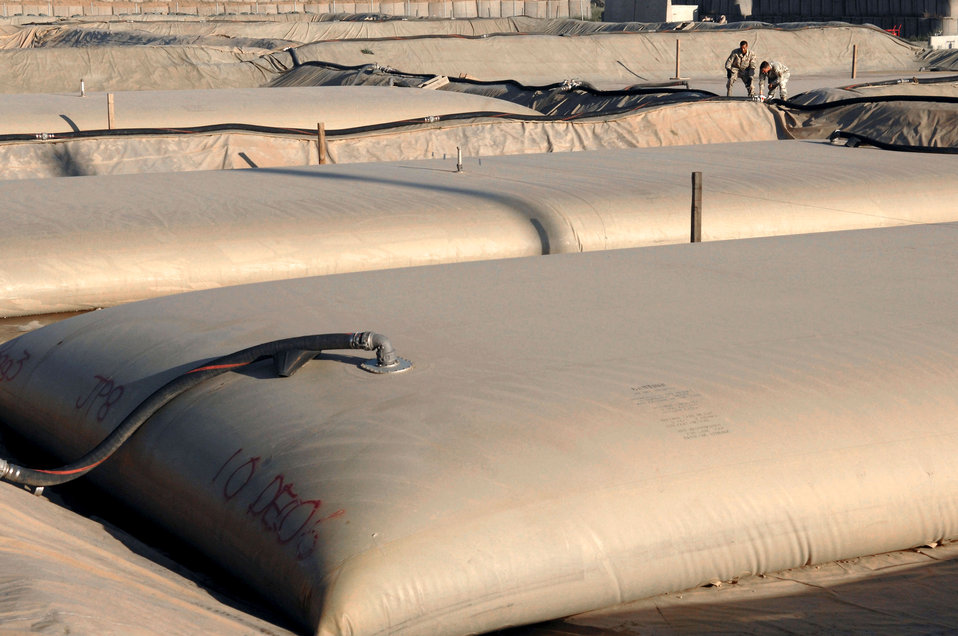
Keepin' the fuel flowin' in Kirkuk

Staff Sgt. Edward Mims and Master Sgt. Kenneth Mayo close a block valve to a 50,000- gallon, JP-8, fuel bladder April 5 at Kirkuk Air Base, Iraq. The Airmen are fuels specialists with the 506th Expeditionary Logistics Readiness Squadron.